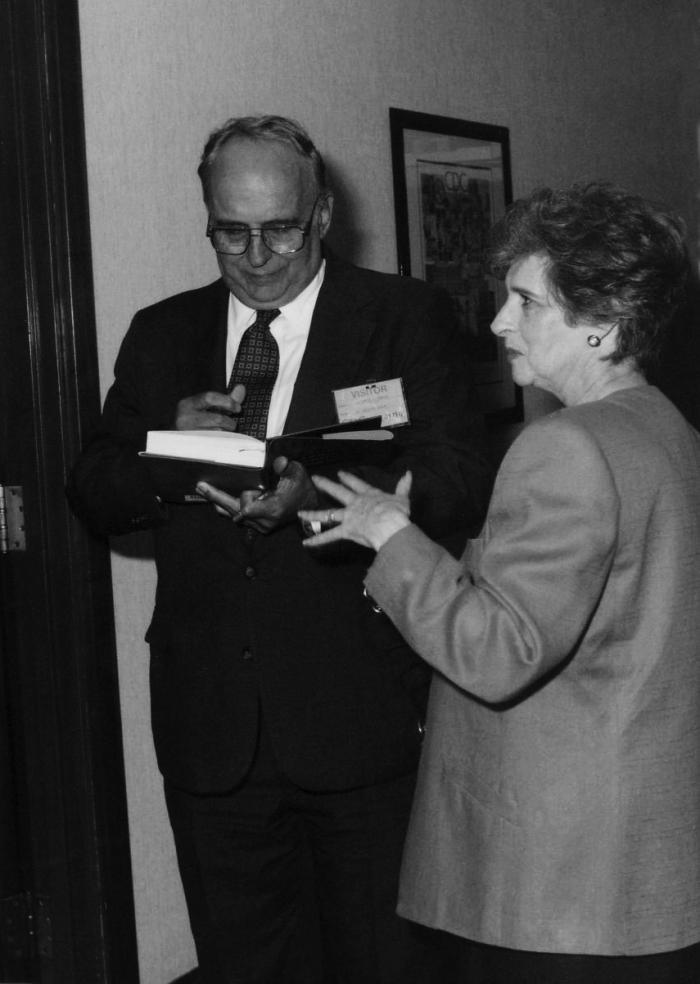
In this 1992 photograph, former Centers for Disease Control Director, David J. Sencer (1966 - 1977), was shown signing a copy of historian Dr. Elizabeth Etheridge's, 'Sentinel for Health: A History of the Centers for Disease Control.'